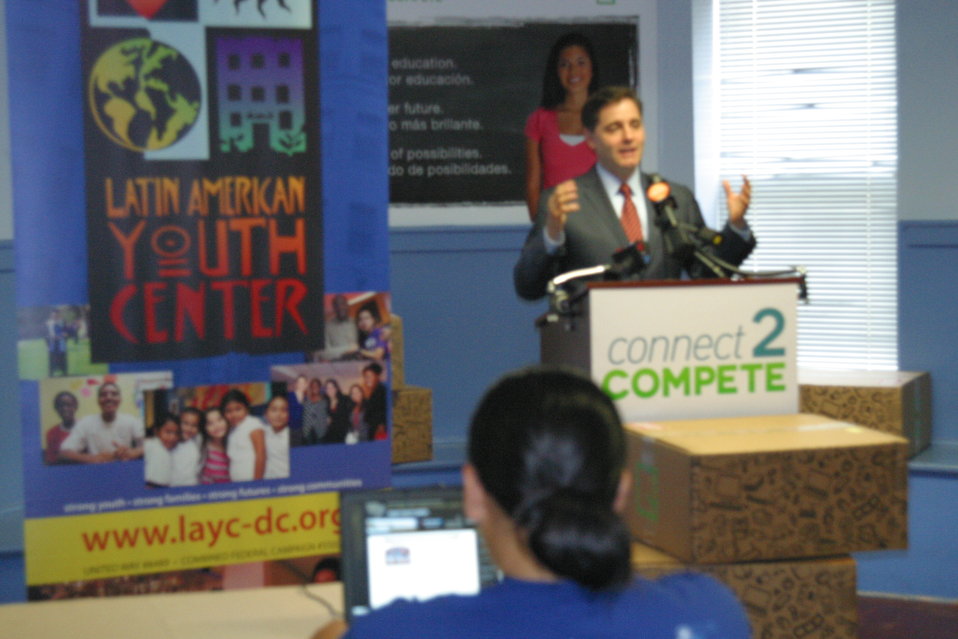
Connect 2 Compete: LULAC 8.7.12

FCC Chairman Julius Genachowski joined representatives from Connect2Compete (C2C), Redemtech, the League of United Latin American Citizens (LULAC), and the Latin American Youth Center (LAYC) to announce the launch of a nationwide computer recycling and donation effort to support C2C’s efforts to close the digital divide.